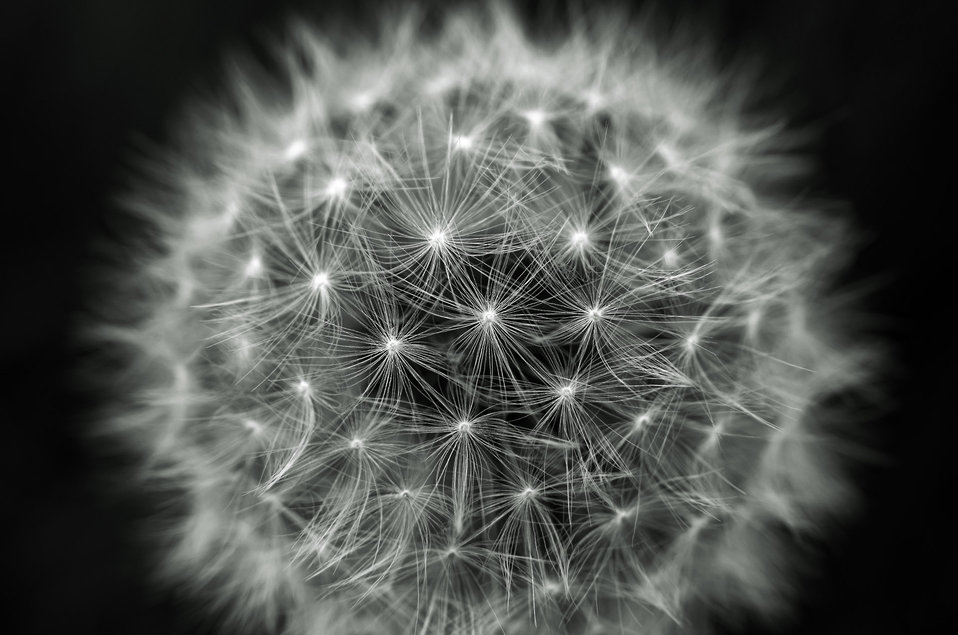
Dandelion - macro.